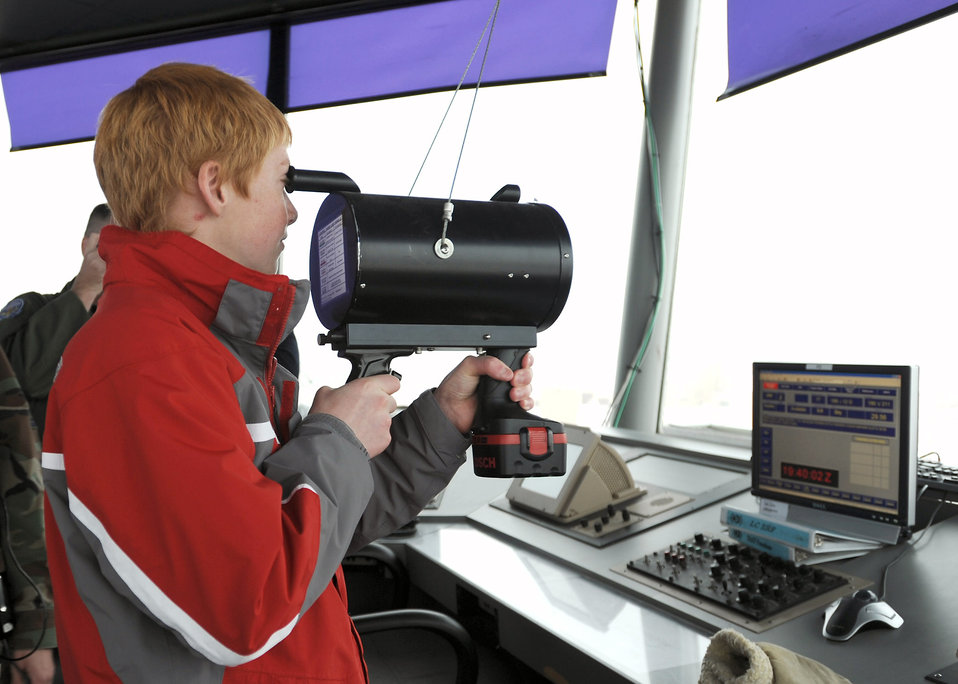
Teen gets to be pilot for a day

Andrew Allen visits the control tower during his Dec. 5 tour of Grand Forks Air Force Base, N.D. Andrew, a victim of Crohn's disease, came to the base as a part of the Pilot for a Day program.